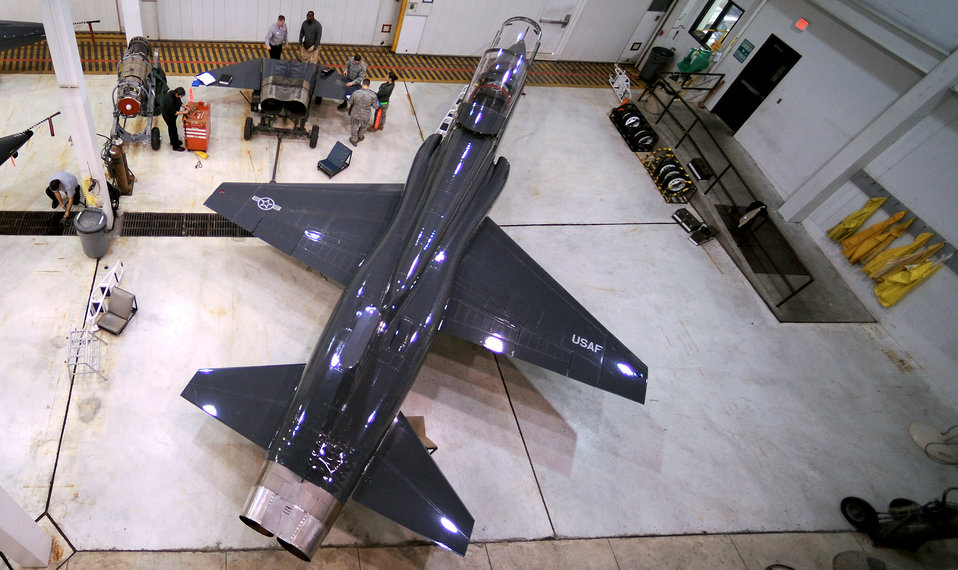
T-38 Talons ready for flight

Crew chiefs and maintainers prepare a T-38 Talon prior to flight Jan. 26, 2011, at Whiteman Air Force Base, Mo.